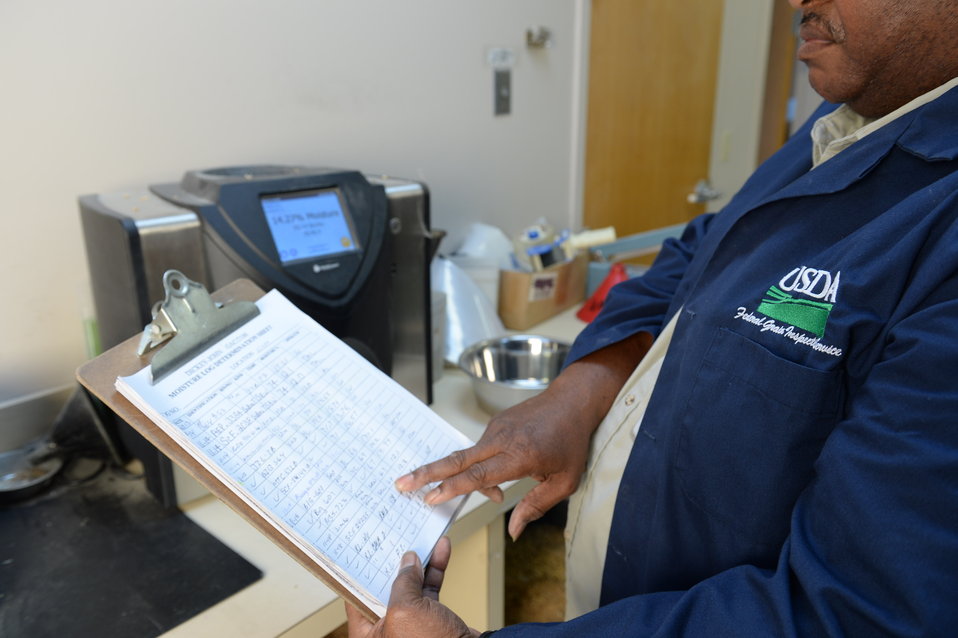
A U.S. Department of Agriculture (USDA) Grain Inspection, Packers and Stockyards Administration (GIPSA) Federal Grain Inspection Service (FGIS) scientist tests corn at the FGIS inspection laboratory in New Orleans, LA on Monday, Nov. 18, 2013.